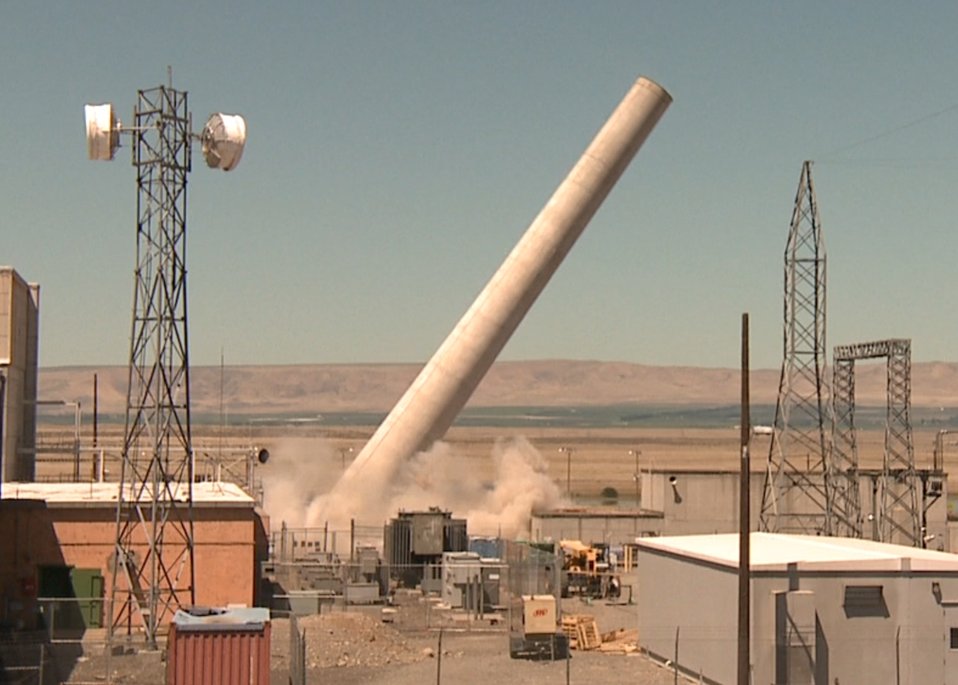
116KE during demolition

Workers safely demolished a 175-foot-high exhaust stack at the Hanford Site in southeastern Washington state, a project supported by $420,000 in Recovery Act funds.